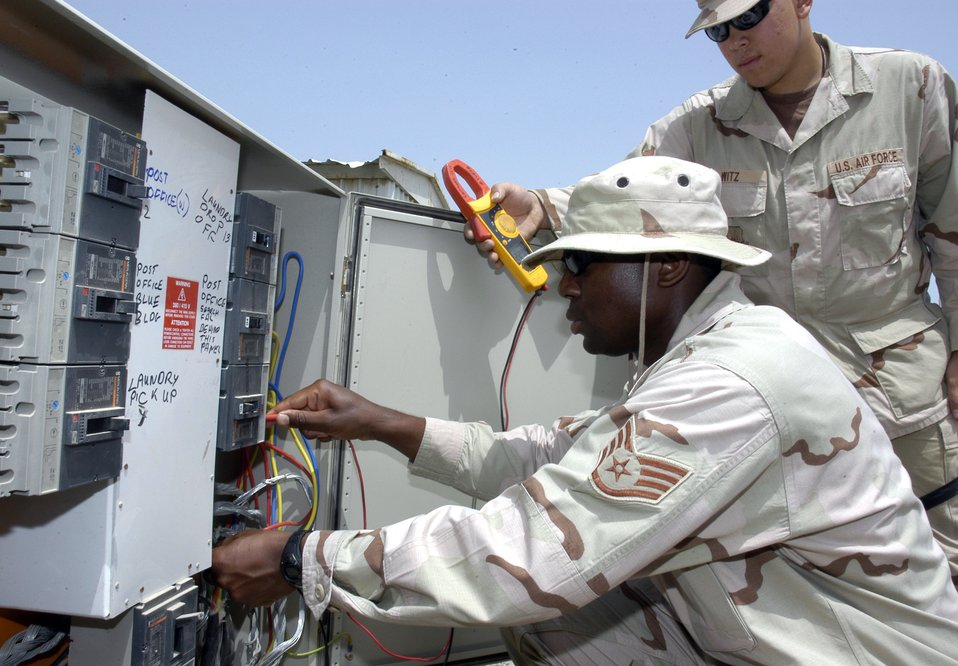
Airmen show 'can-do' spirit in joint-force environment

Staff Sgt. Lawrence Beamon uses a multimeter to check the power voltage in a transformer box at Camp Patriot an undisclosed location in Southwest Asia. Senior Airman Jerico Witz assists. Camp Patriot is a camp run for the Army by the Air Force through a